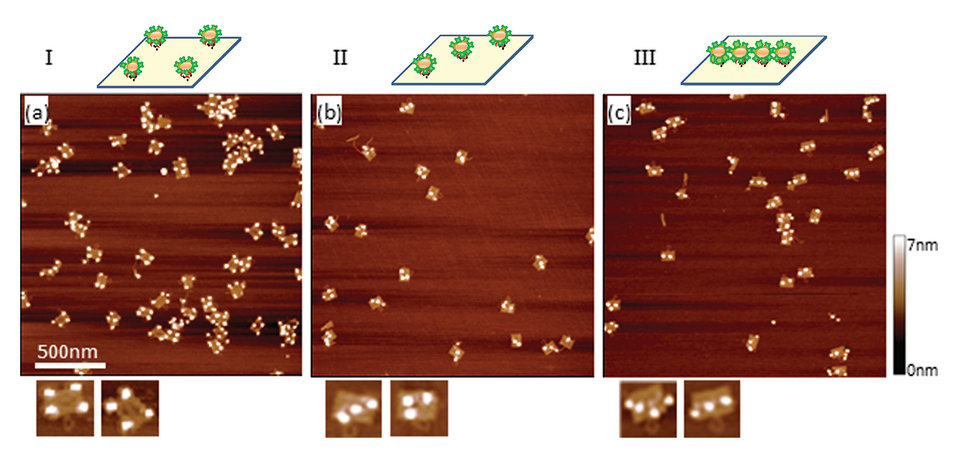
DNA origami: NIST researchers made three DNA origami templates designed so that quantum dots would arrange themselves: (a in the corners, b) diagonally (three dots), and (c in a line (four dots). The researchers found that putting the quantum dots closer together caused them to interfere with one another, leading to higher error rates and lower bonding strength.